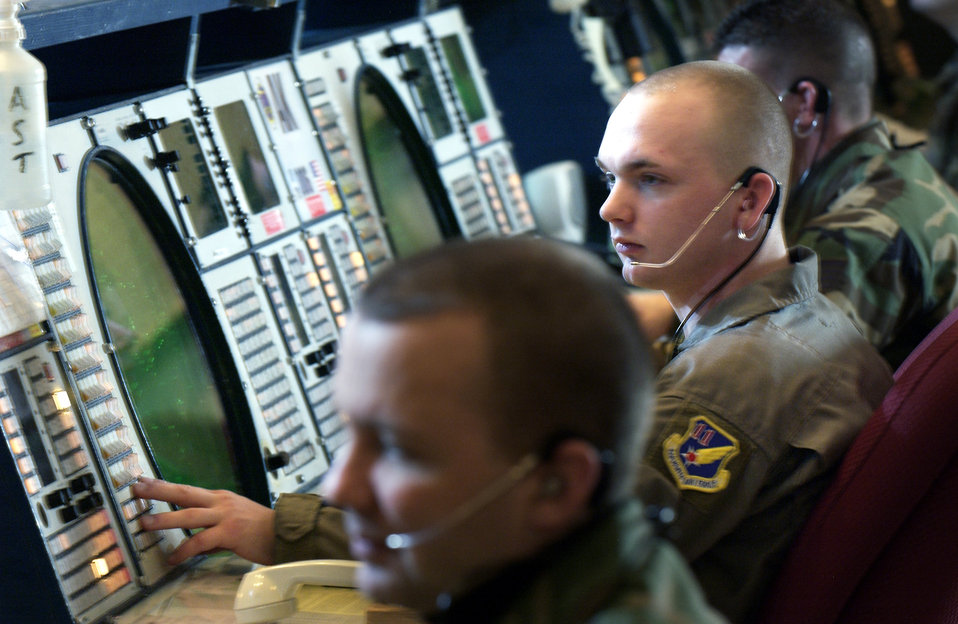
Operation Noble Eagle

ELMENDORF AIR FORCE BASE, Alaska -- Airman 1st Class Melvin Casler, a tracking technician with the 611th Air Control Squadron here, helps monitor 1.3 million miles of Alaskan airspace as part of Operation Noble Eagle's air superiority mission over the northern frontier.